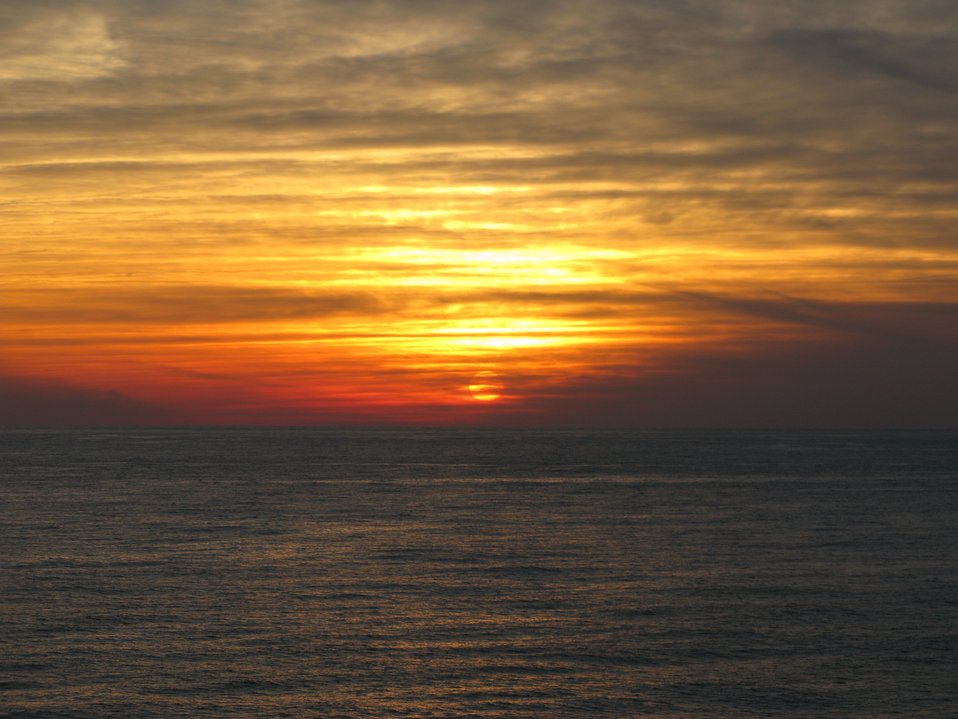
Sunset over the Gulf of Mexico